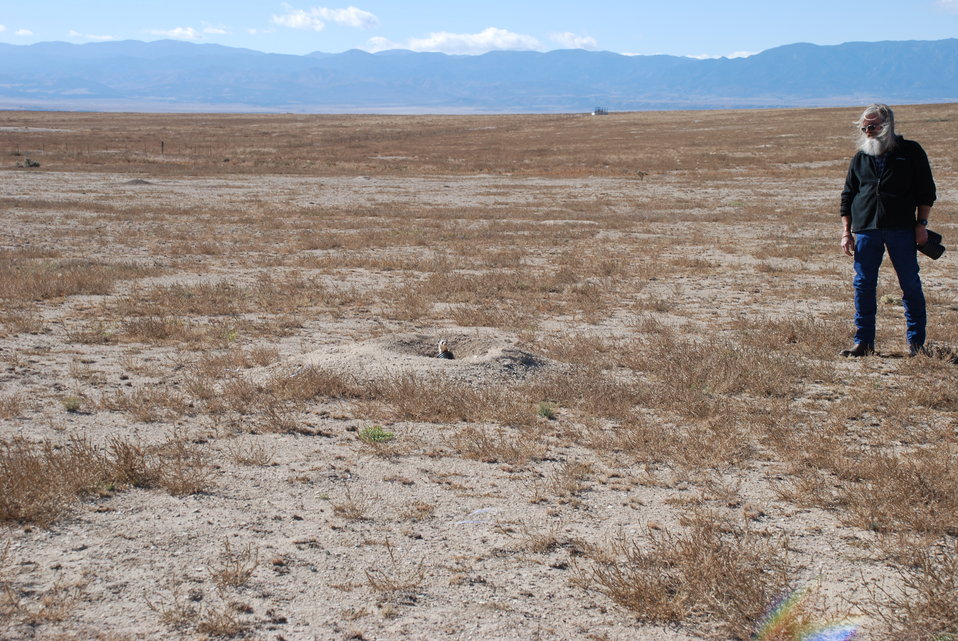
Black-footed Ferret Release

On Wednesday, October 30, 2013, thirty endangered black-footed ferrets were released onto cattle rancher Gary Walker's land, west of Pueblo, Colorado.

The release launched a potentially new way of preserving endangered species and was accomplished by way of a Safe Harbor Agreement (SHA). This SHA provides opportunities for private and Tribal landowners to volunteer their lands for reintroductions of this endangered species without affecting their land-use activities beyond mutually agreed-upon measures. It also extends these assurances to surrounding non-participating lands and other landowner interests. This SHA will be an important step in promoting the recovery of this iconic species.